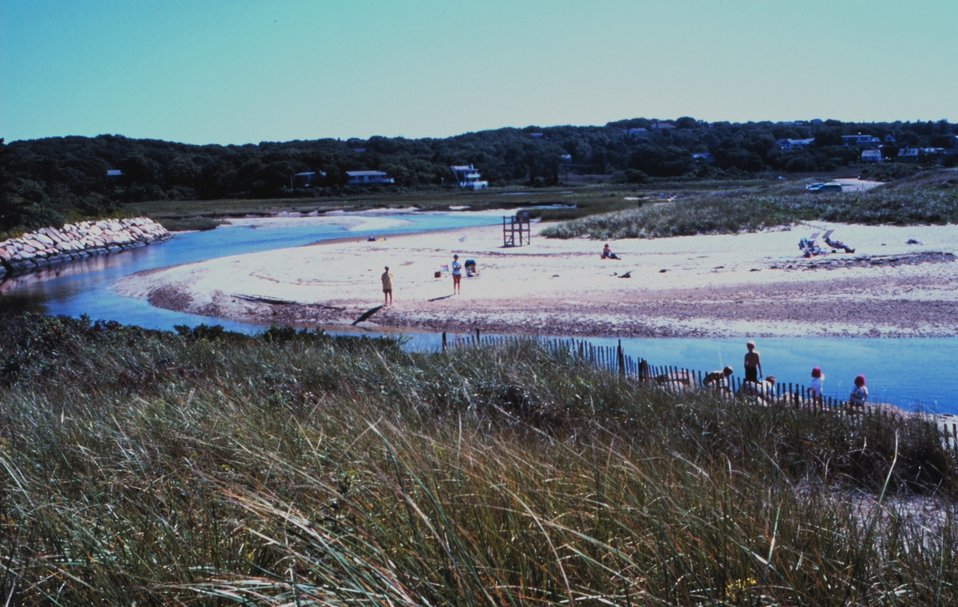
Woodneck Beach - Little Sippewissett Marsh, Falmouth